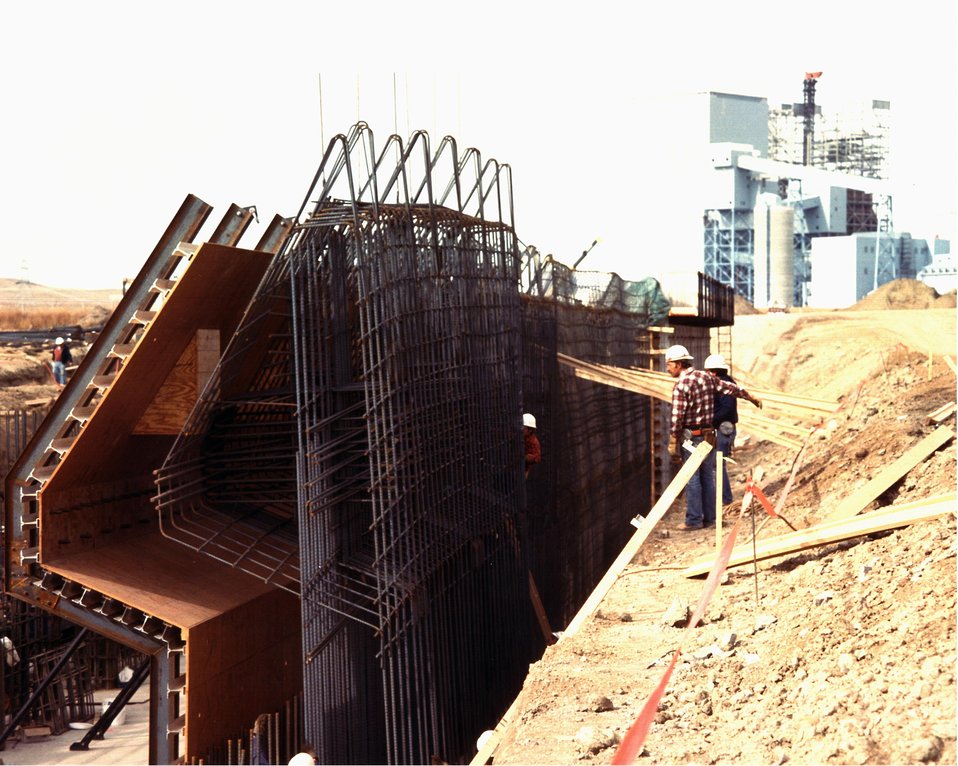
THE FRAMING AND STRUCTURAL STEEL ARE READY FOR THE CONCRETE DURING FOUNDATION WORK AT GREAT PLAINS.

THE GREAT PLAINS COAL GASIFICATION PLANT WILL PRODUCE AN AVERAGE OF 125 MILLION CUBIC FEET PER DAY OF SYNTHETIC HIGH-BTU GAS. THIS GAS, A DIRECT SUBSTITUTE FOR NATURAL GAS, IS TO BE MARKETED THROUGH AN INTERSTATE NETWORK OF GAS PIPELINES. APPROXIMATELY 14,000 TONS OF LIGNITE WILL BE FED EACH DAY INTO 12 LURGI GASIFIERS (2 ADDITIONAL GASIFIERS WILL BE KEPT ON STANDBY). GAS EXITING THE GASIFIERS WILL BE COOLED, CLEANED OF SULFUR, AMMONIA, AND OTHER IMPURITIES, THEN UPGRADED TO A PIPELINE QUALITY SYNTHETIC NATURAL GAS. THE LURGI PROCESS WILL USE THE LARGER-SIZED COAL FROM THE PLANT'S COAL CRUSHING OPERATION WHILE SOME 8,000 TONS PER DAY OF THE SMALLER SIZE COAL WILL BE SOLD TO AN ADJACENT STEAM ELECTRIC GENERATING PLANT. THE GREAT PLAINS PLANT WILL ALSO PRODUCE 93 TONS PER DAY OF AMMONIA AND 85 TONS PER DAY OF SULPHUR.